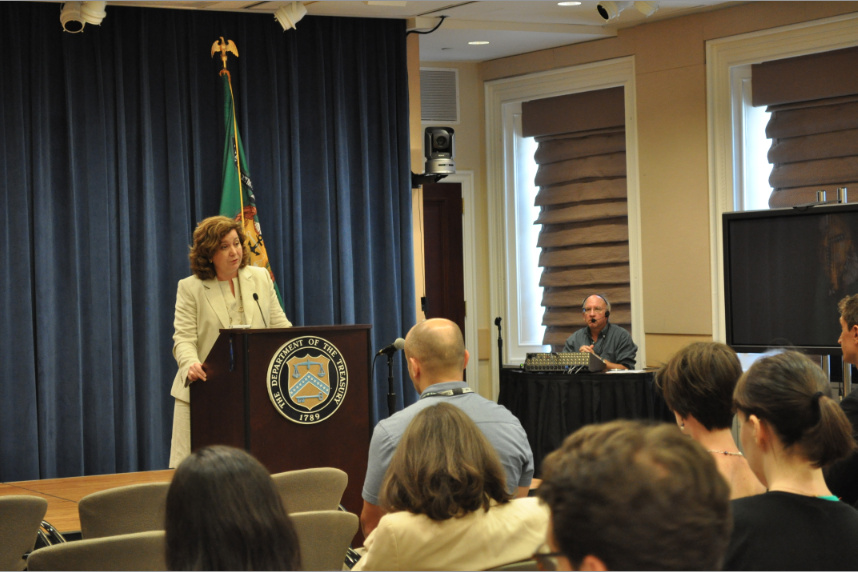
Assistant Secretary for Economic Policy and Chief Economist Jan Eberly briefs reporters